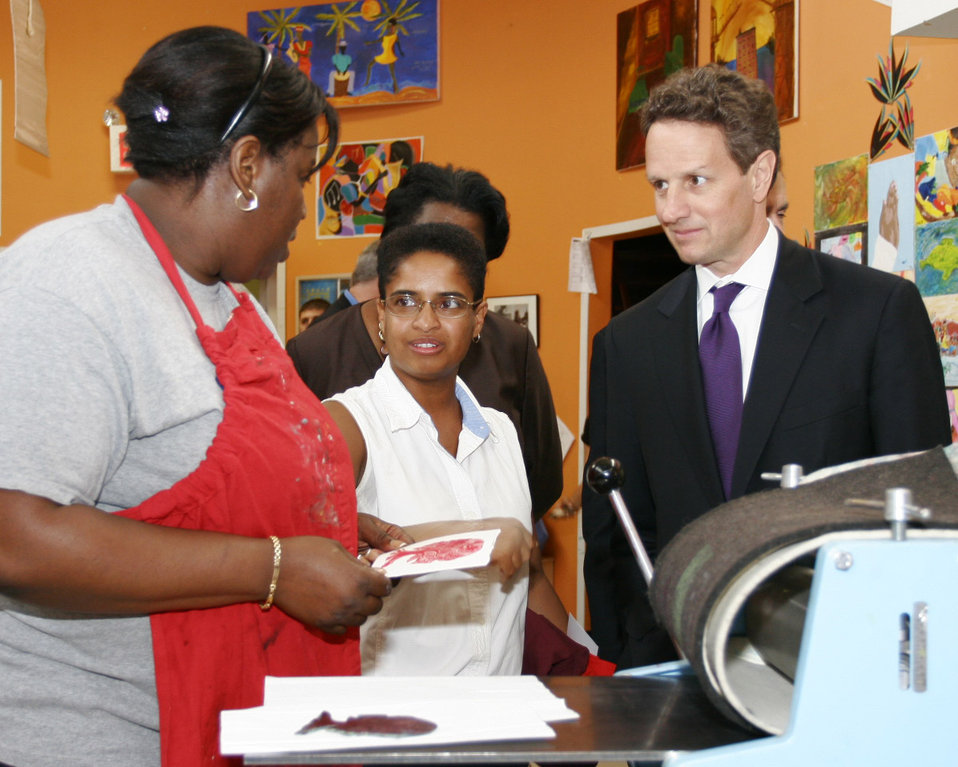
The Point: June 29, 2009

Secretary Geithner touring The Point with Melanie Dunston, studio 889 instructor, and Maria Torres, President and CEO of The Point Community Development Corporation.